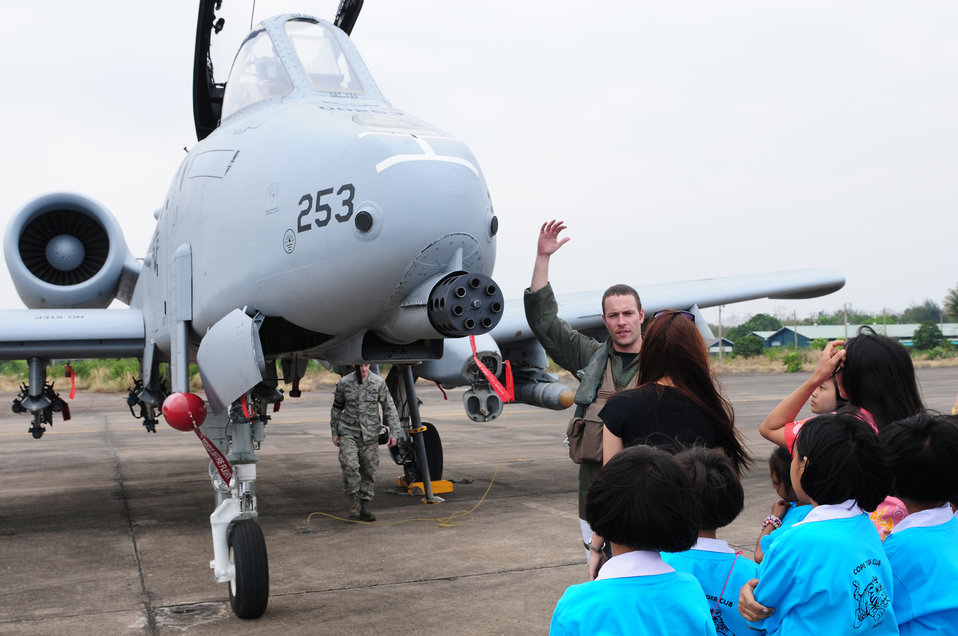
Cope Tiger 2010 open house

Capt. Joel Bernazzani talks about the A-10 Thunderbolt II during the Cope Tiger 2010 open house held for more than 50 Thai students March 10 at Udon Thani Royal Thai Air Force Base, Thailand. Captain Bernazzani is a pilot from the 25th Fighter Squadron at Osan Air Base, South Korea.